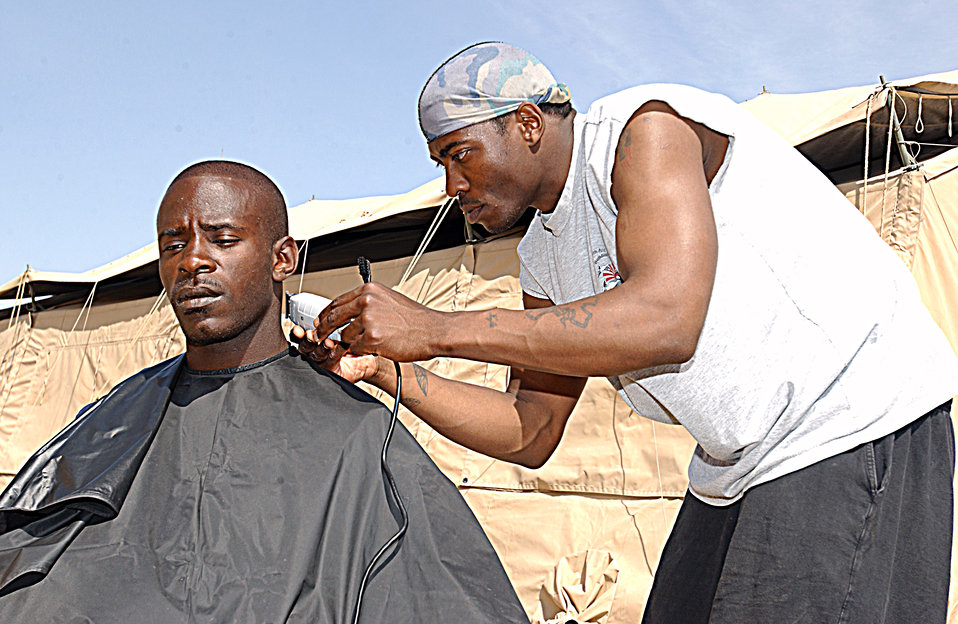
Desert cut

TALIL AIR BASE, Iraq -- Staff Sgt. Phashaun McCrary gives Senior Airman Thomas Spencer a haircut outside their tent here April 1. Staff Sgt. McCray and Senor Airman Thomas are both assigned to the 407th Expeditionary Civil Engineer Squadron here.